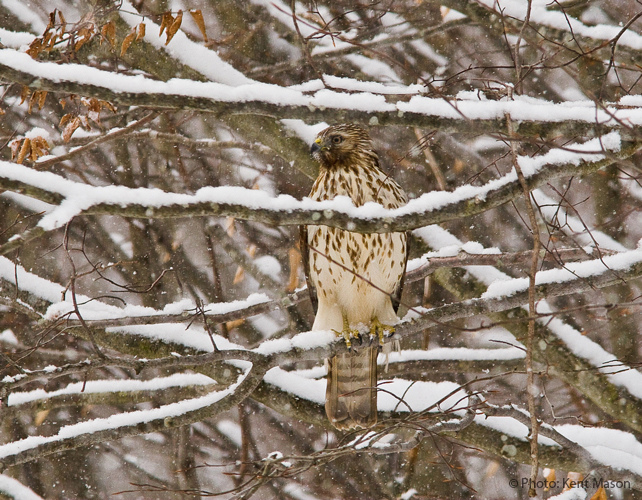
Hawk in Winter

A Cooper's hawk scans the landscape for its next meal.